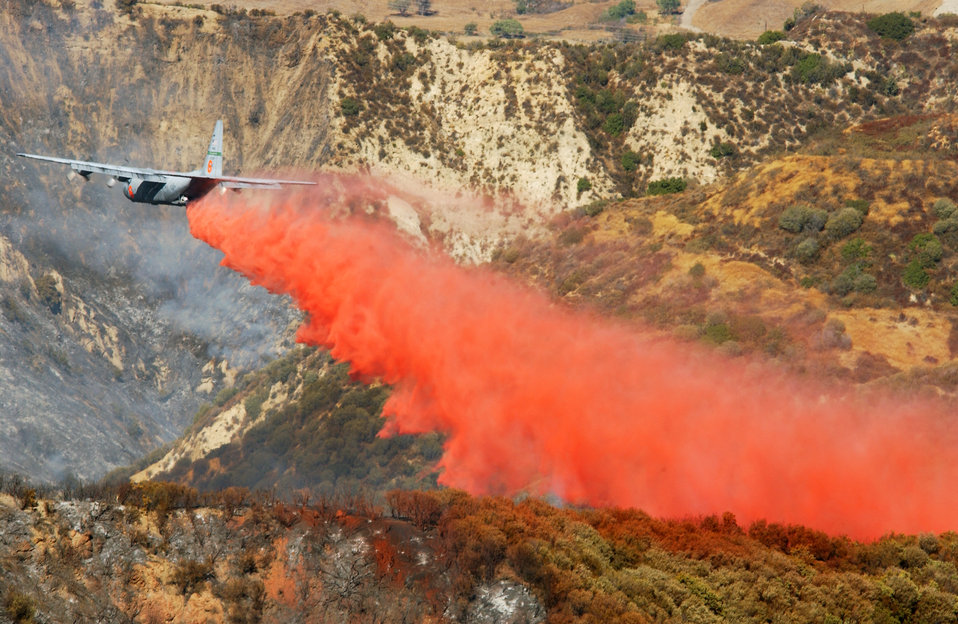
California Fires

SOUTHERN CALIFORNIA -- A C-130E Hercules Modular Airborne Fire Fighting System from the 146th Airlift Wing at Channel Islands Air National Guard Station, Calif., makes a Phoschek fire retardant drop on the Simi fire here Oct. 28. Pilots flying eight Air Force C-130 Hercules cargo airplanes have dropped 129,600 gallons of retardant on the Simi fire during 48 sorties and 32 flying hours as of Oct. 29.